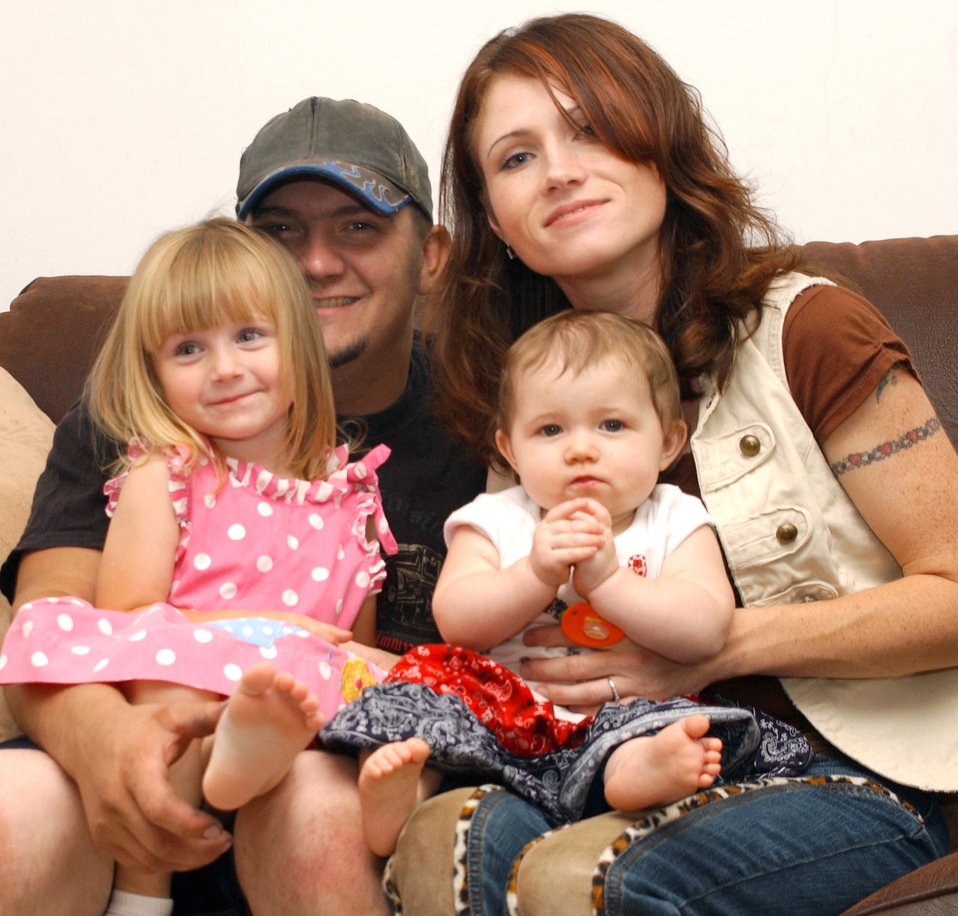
Despite stormy start, 'Katrina baby' thrives

Life is getting back to normal for Senior Airman Aaron and Stephenie Post, here with 3-year-old Austin and 10-month-old Sage Madison, after having settled in a home in military family housing.